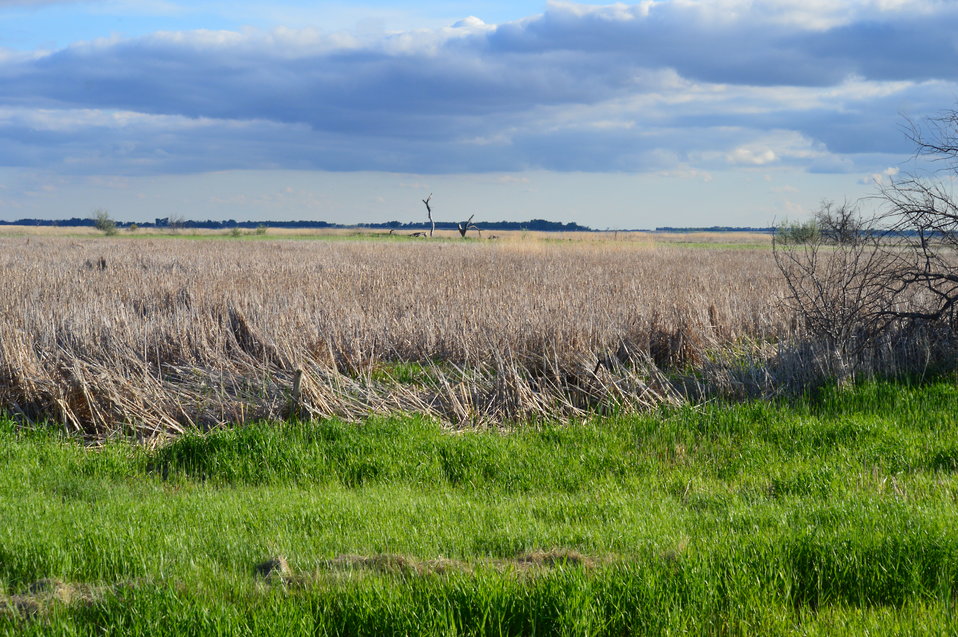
Scenic view at Sand Lake NWR

Scenery and wildlife at Sand Lake National Wildlife Refuge in South Dakota